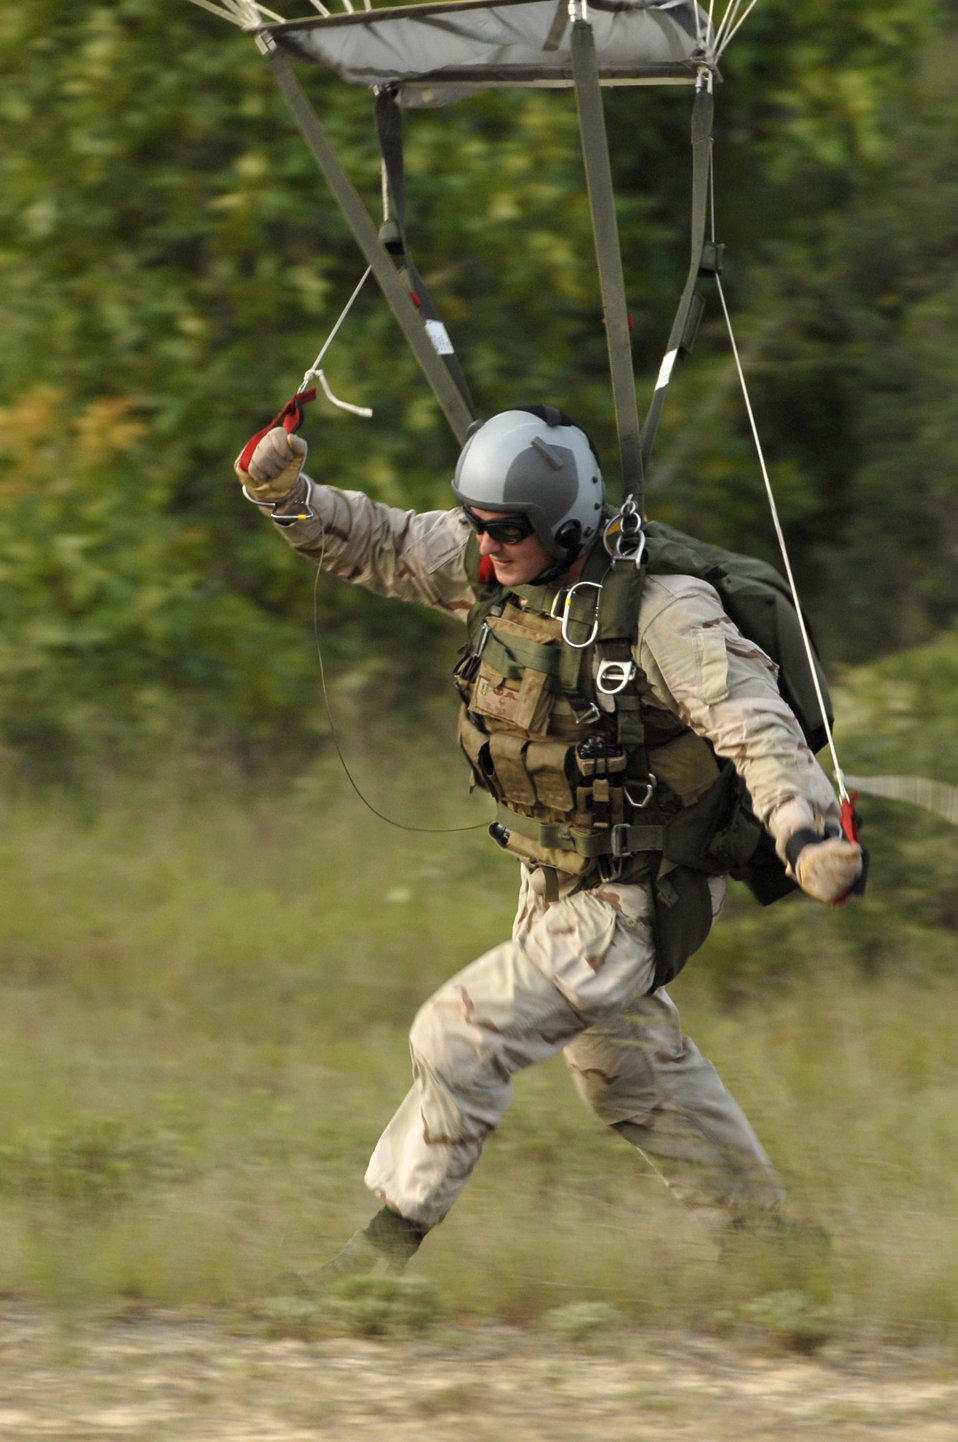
Special Operations Command Airman dies in Afghanistan

Staff Sgt. Timothy P. Davis participated in parachute readiness training. Sergeant Davis died of wounds suffered when his vehicle encountered an improvised explosive device Feb. 20 in Afghanistan. He was assigned to the 23rd Special Tactics Squadron at Hurlburt Field, Fla.